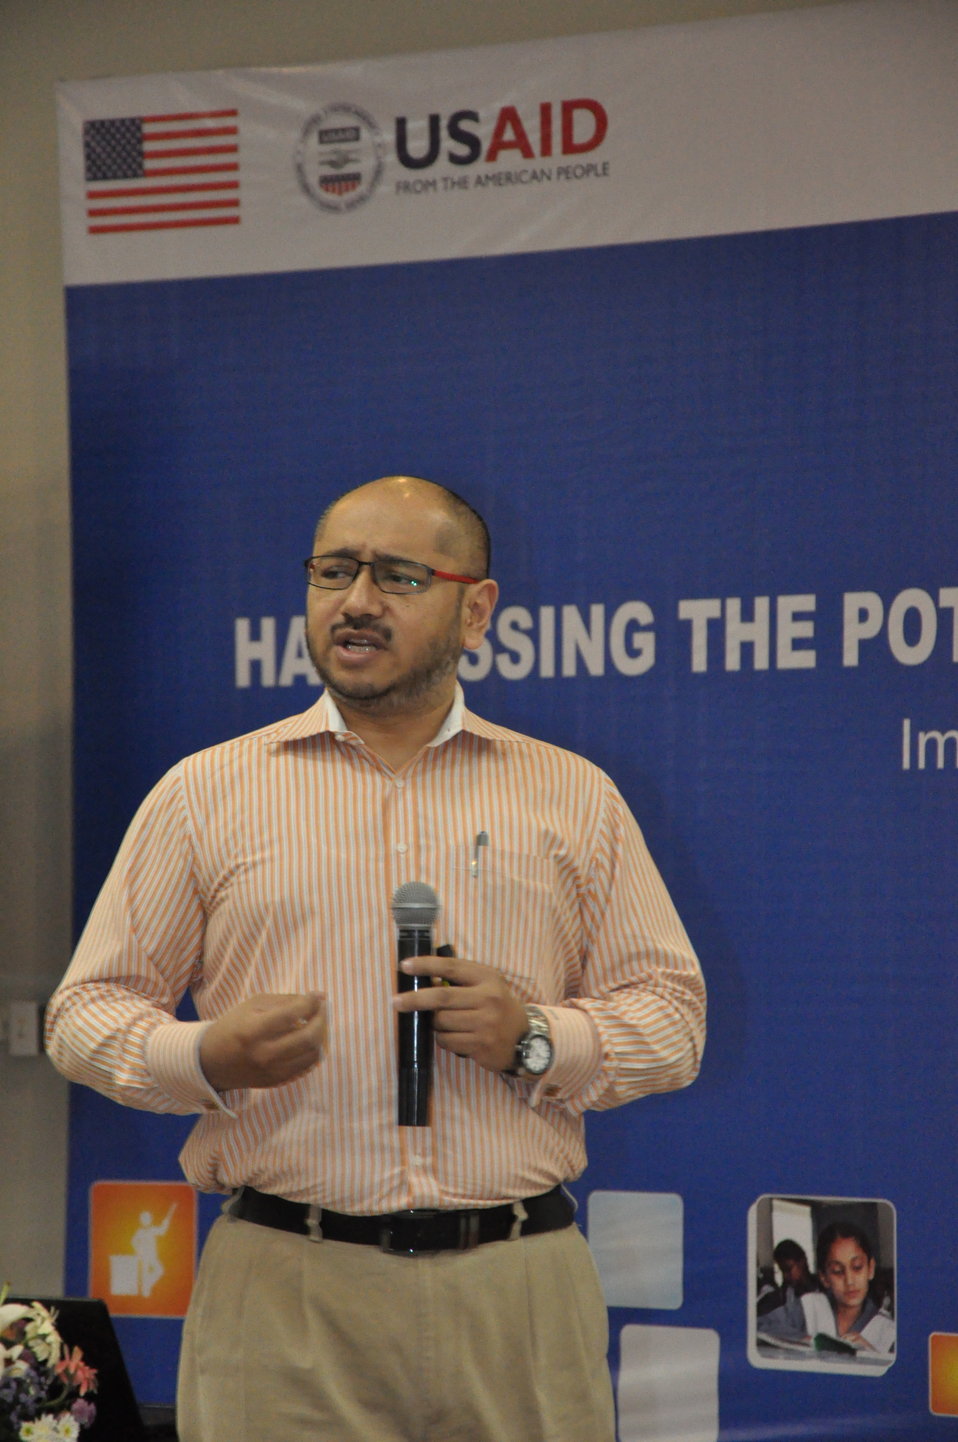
Representative from Akhuwat